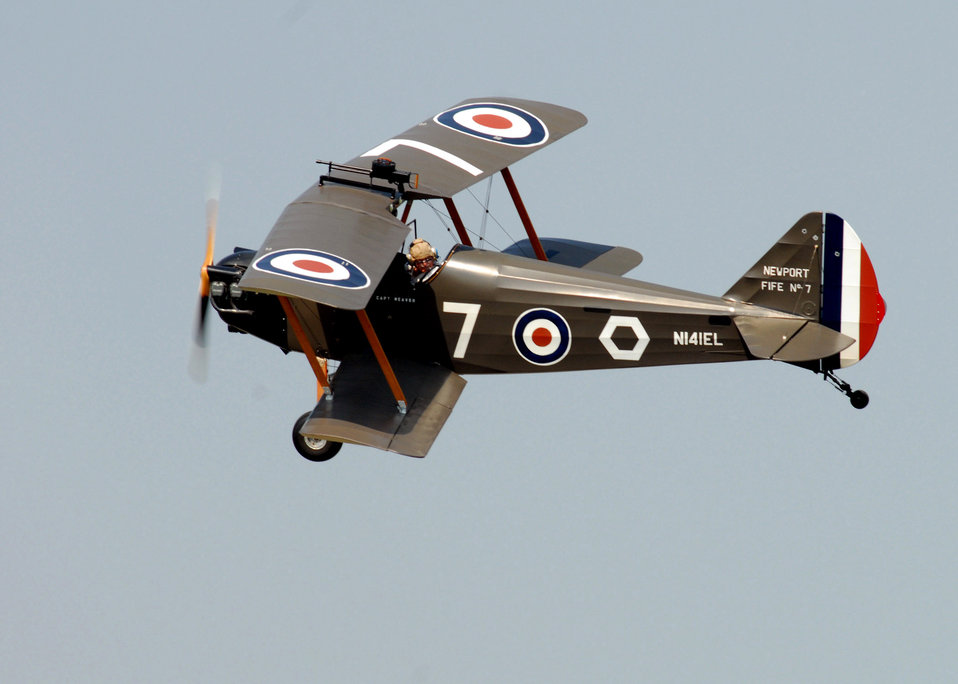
World War 1 Fly In

A pilot checks his bomb placement after dropping a